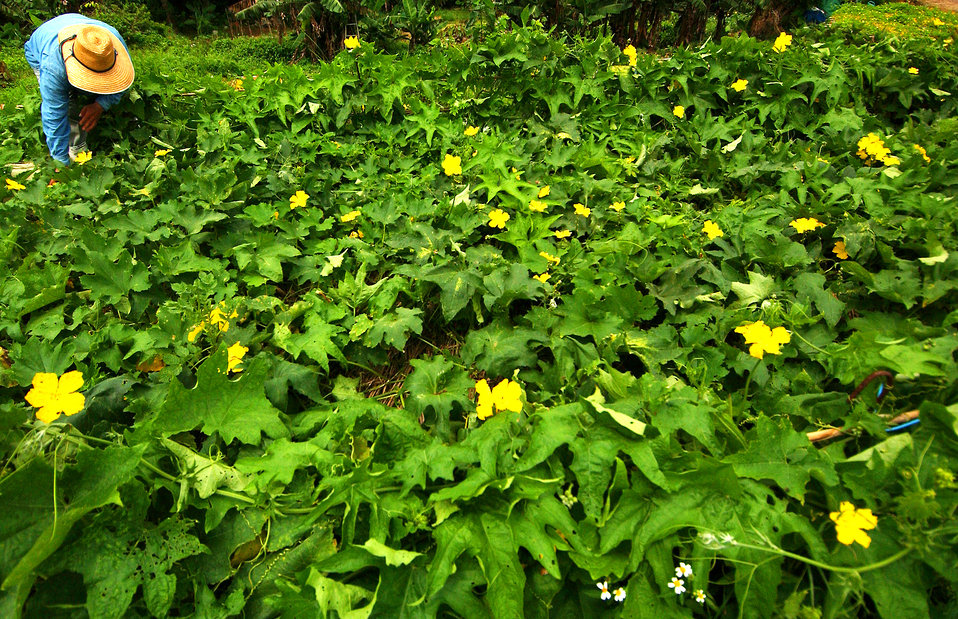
Tacit farmers return to their roots at air base

Farming is considered the essence of life in Okinawa, Japan. Kadena Air Base's munitions storage area is host to nearly 700 tacit farmers from Kadena Town, Chatan Town and Yomitan, Japan. Tacit farmers work long hours and seem oblivious to the sounds of military aircraft flying overhead or the sight of those in military uniform passing by from time to time.